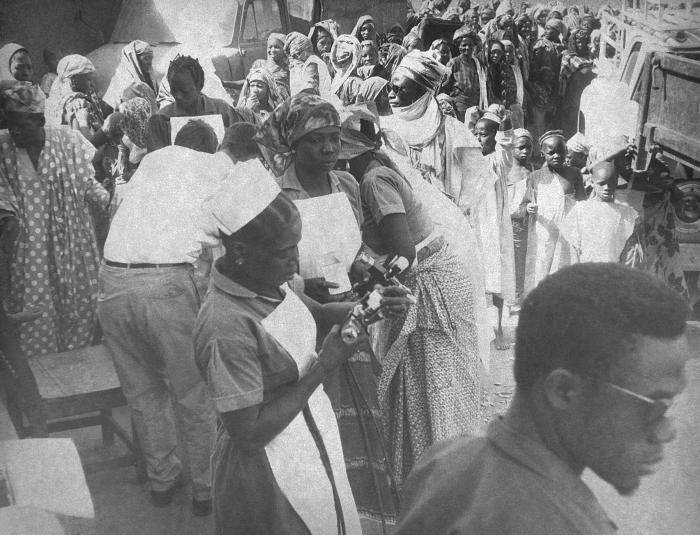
This image was captured during Nigeria's Smallpox Eradication Program activities, 1968.